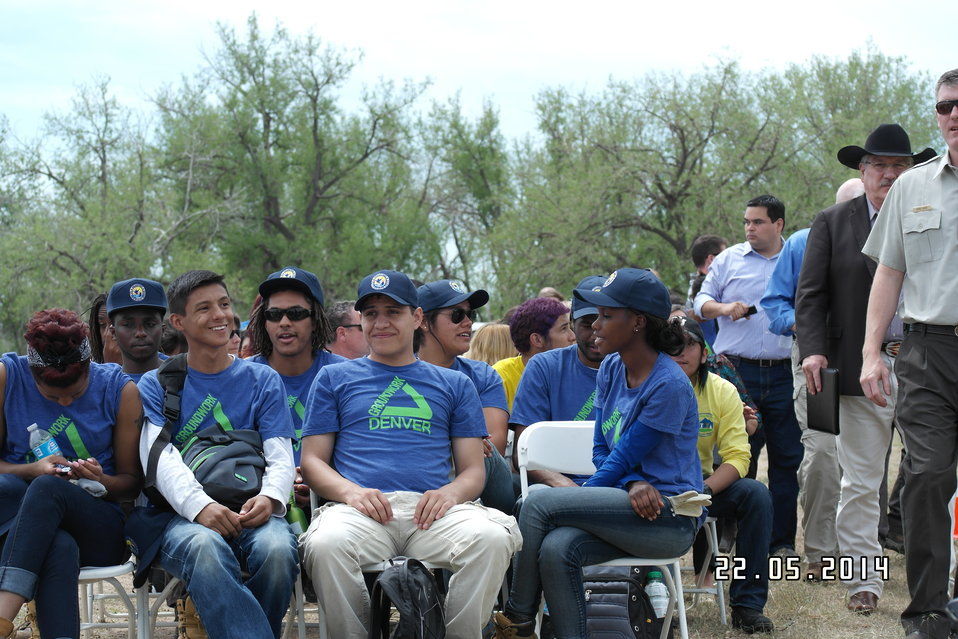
Secretary Jewell Announces $6.7 for Youth Conservation Jobs

Jewell made the announcement at an event at Rocky Mountain Arsenal National Wildlife Refuge outside Denver, Colorado, where she was joined by U.S. Department of Agriculture (USDA) Deputy Under Secretary for Natural Resources and the Environment Arthur “Butch” Blazer; Greg Knadle, Vice President for Government Relations of the National Fish and Wildlife Foundation (NFWF); Refuge Manager David Lucas and youth corps members of Groundwork Denver.